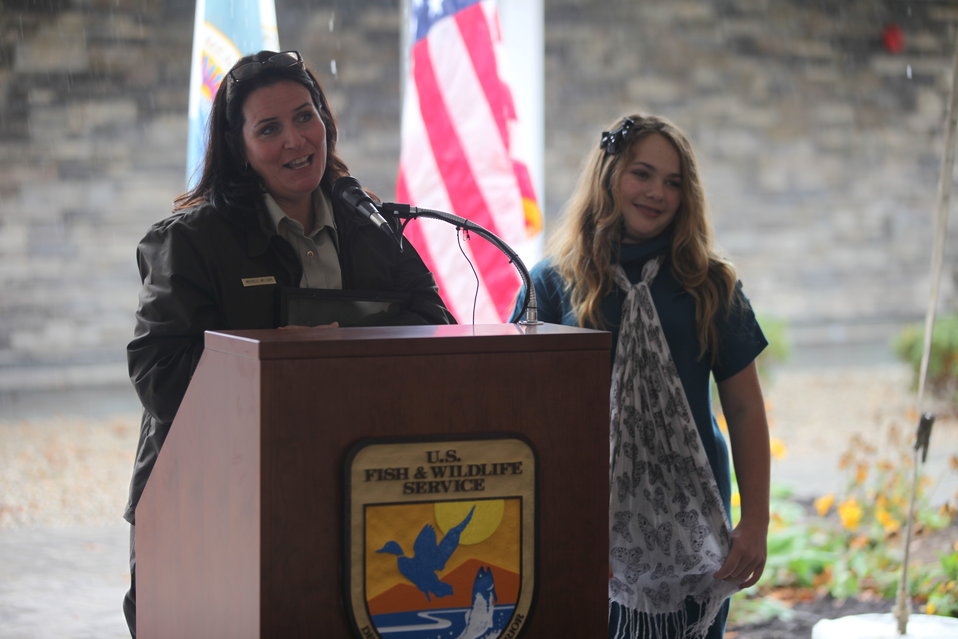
Olivia Bouler & Michelle Williams

Local celebrity, artist, book author and fund-raiser, 12 year old Olivia Bouler seen here with Refuge Manager Michelle Williams. Olivia is famous for her book 'Olivia's Birds'. Her book has generated over $200,000 for conservation and was inspired by her reaction to the recent Gulf of Mexico oil spill.